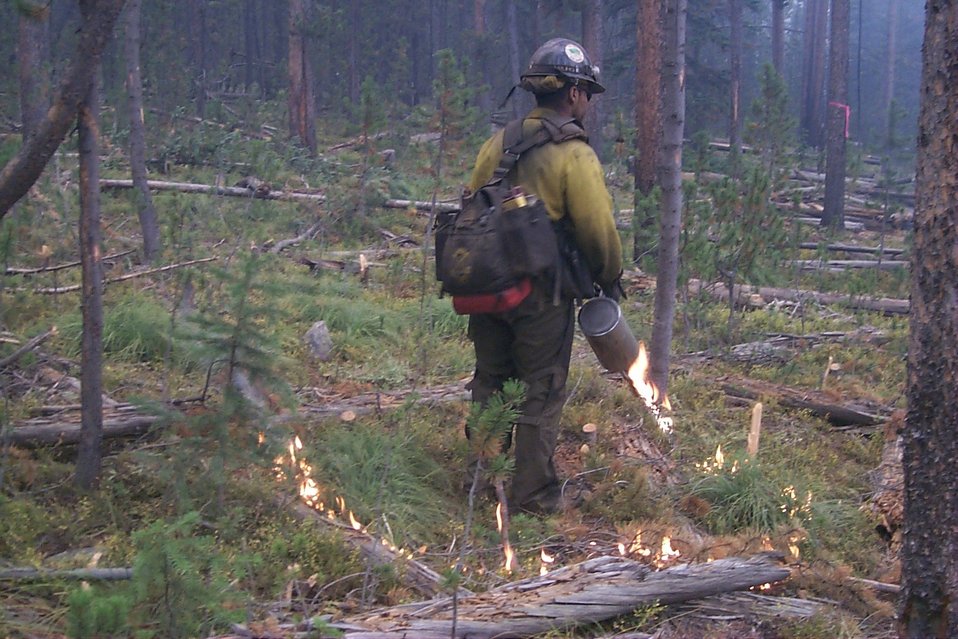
Controlled burn Fire Clearwater Fire Salmon Field Office USRD Upper Snake River District